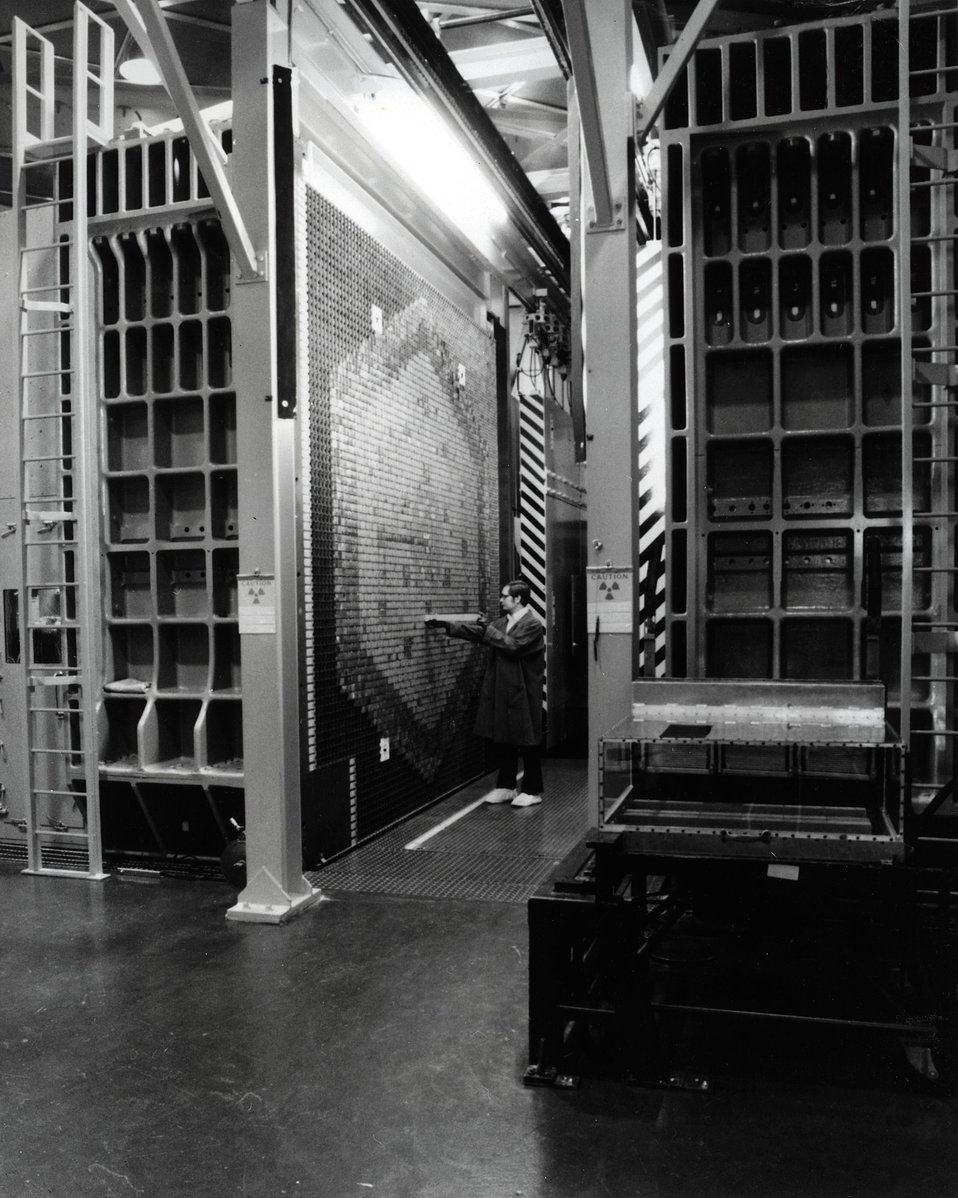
Nuclear engineer inserting fuel into the ZPPR. 1979